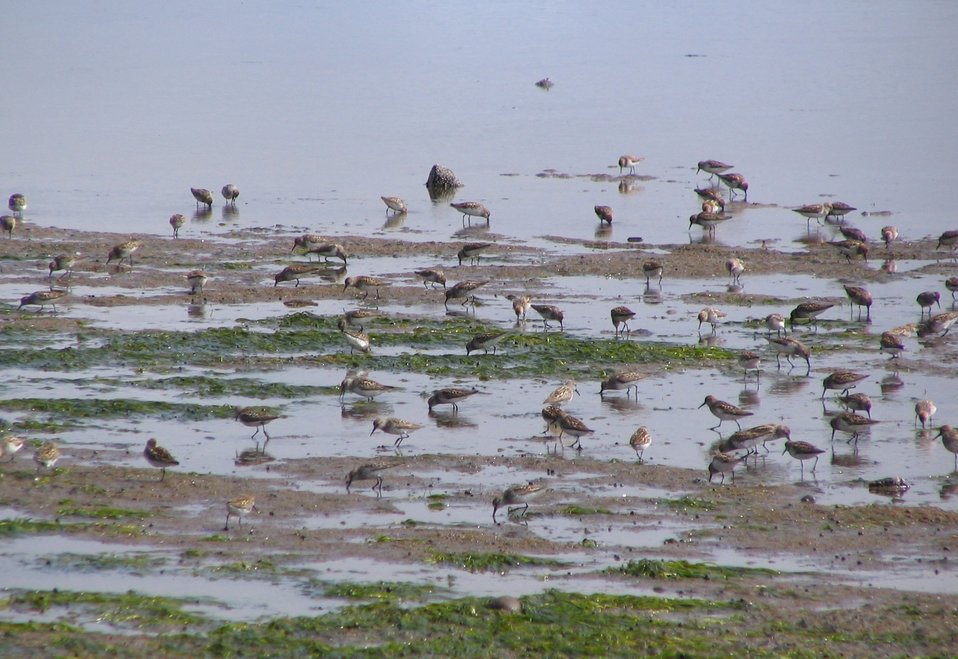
Western sandpipers and a few Rock sandpipers, Kinzarof Lagoon, Izembek National Wildlife Refuge